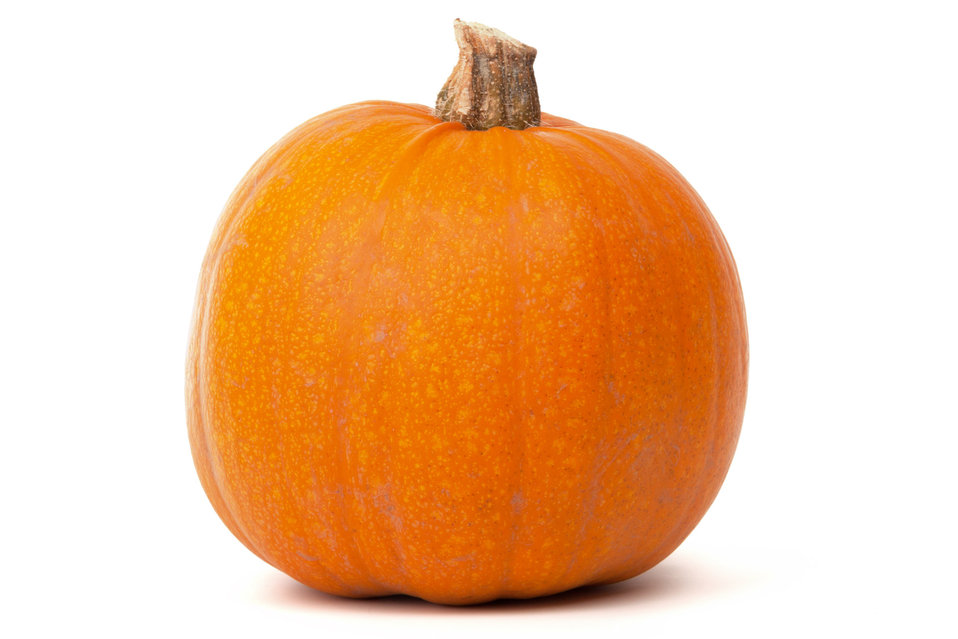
Pumpkin isolated

Orange pumpkin isolated on white background.